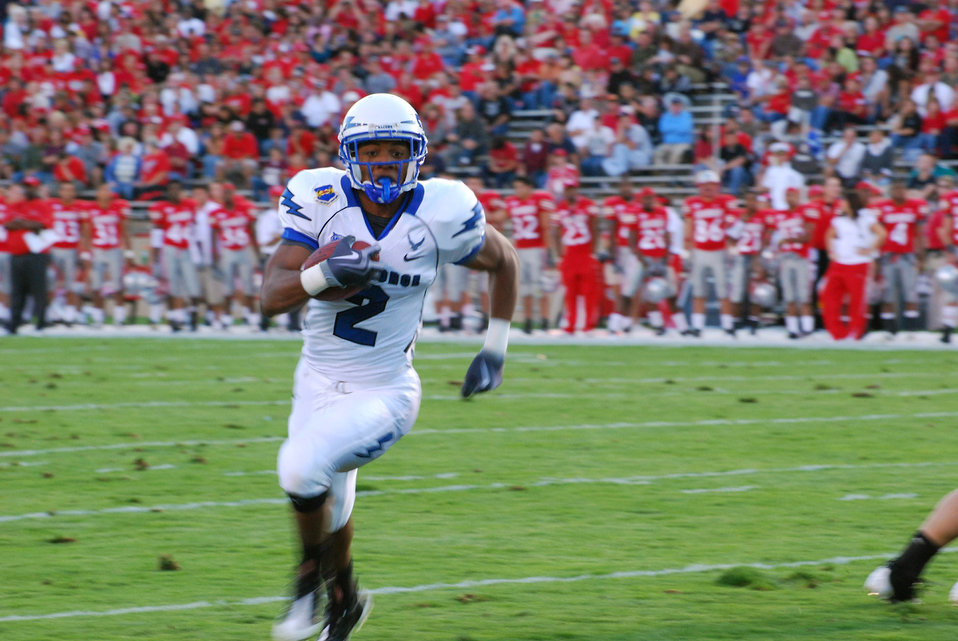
Football: Falcons feast on turnovers, down New Mexico 37-13

U.S. Air Force Academy junior running back Savier Stephens races to the corner to score on a 6-yard run and put the Falcons up 23-0 during football action Sept. 19, 2009, at Albuquerque, N.M.